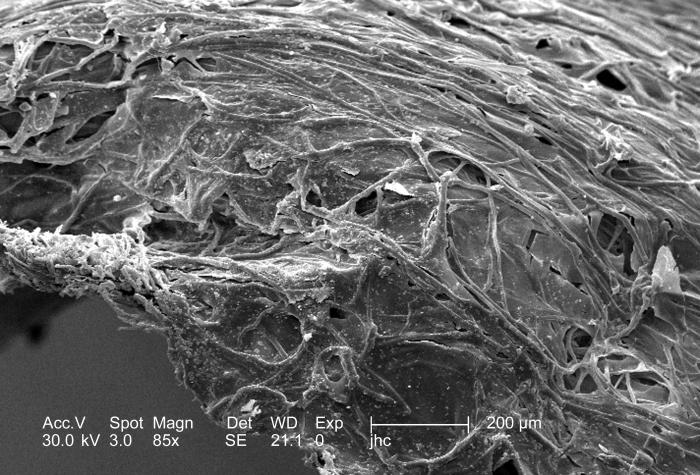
At a relatively low magnification of 85x, this scanning electron micrograph (SEM) depicted some of the ultrastructural details made visible of the surface of an unidentified wasps' nest found on the ground in the Decatur, Georgia suburbs. Note that the nest material takes on the appearance of woven fibers embedded in a glue-like matrix, very similar to the way in which rebar, i.e., iron textured rods, is embedding in concrete to reinforce the building material.